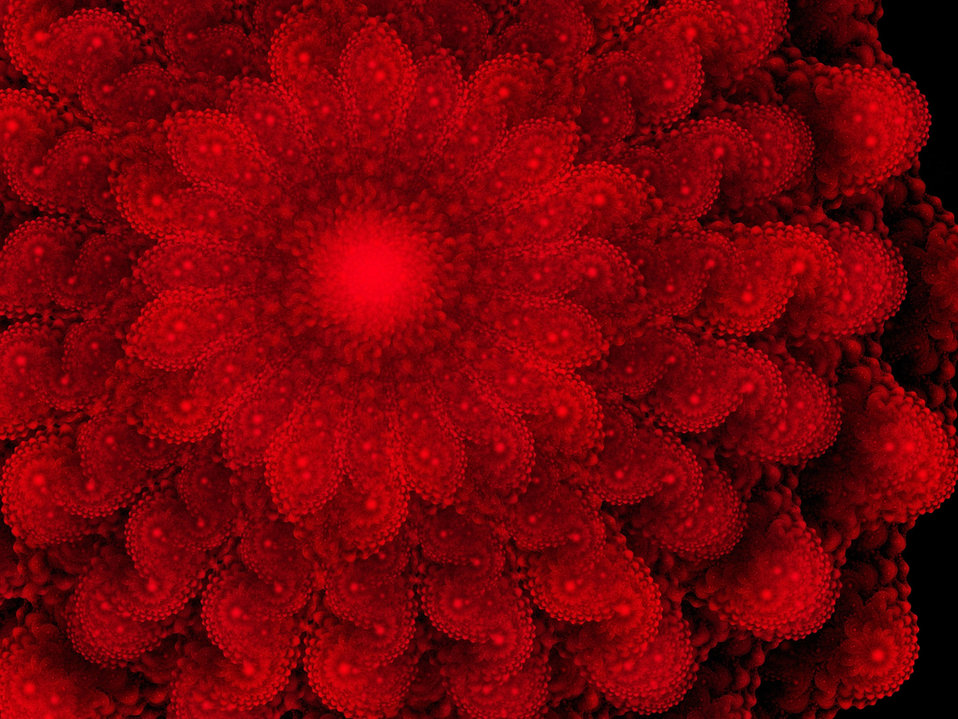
Red swirls

Fractal swirls in lovely red.